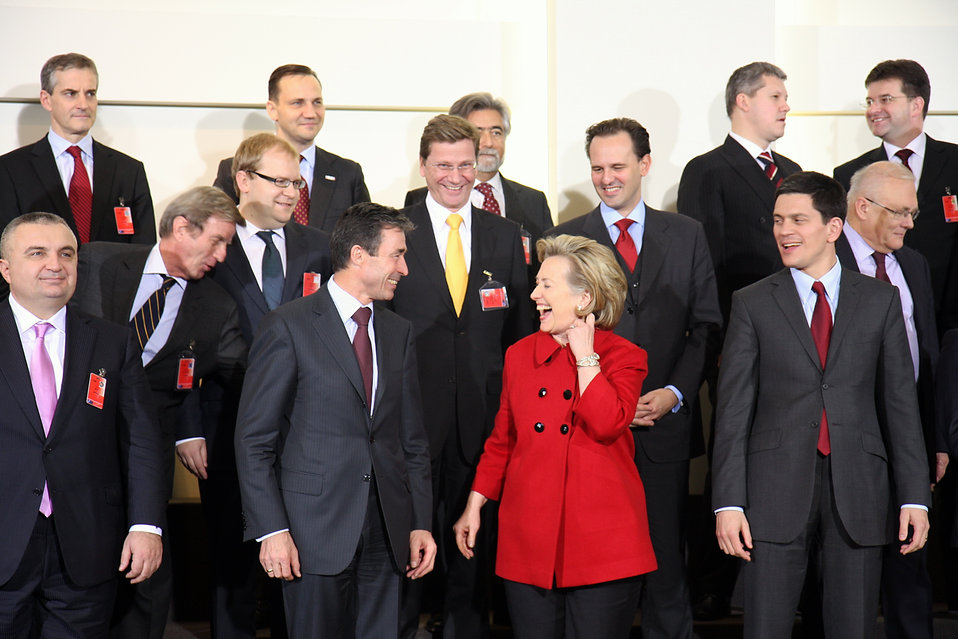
Official Portrait at NATO Headquarters

U.S. Secretary of State Hillary Rodham Clinton poses for an official portrait at the conference hall of NATO headquarters in Brussels, Belgium December 4, 2009.